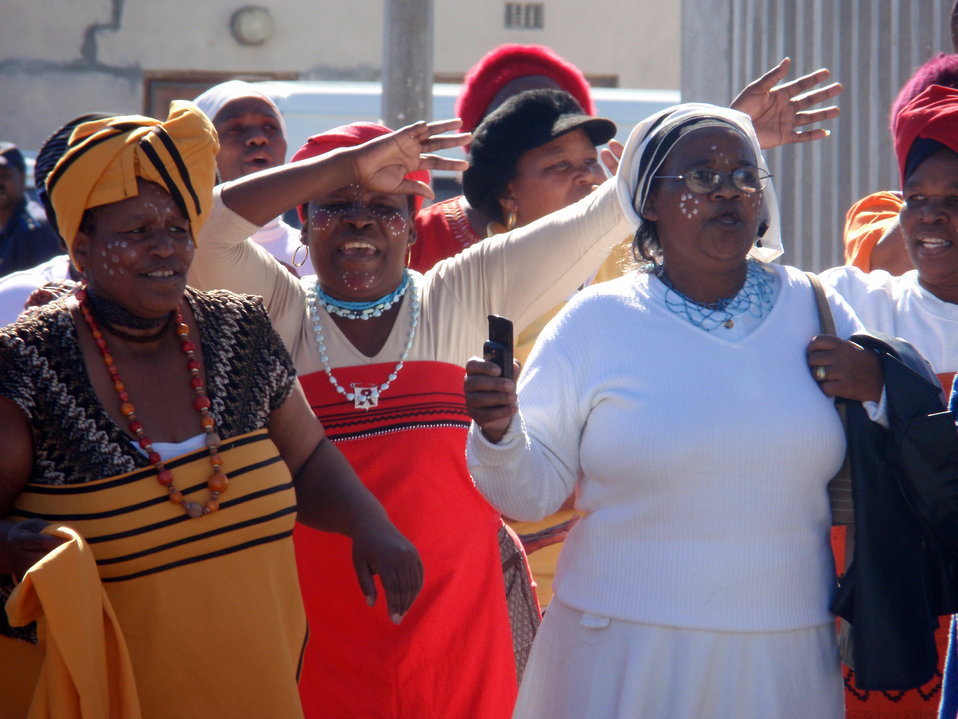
Behind the Scenes: Secretary Clinton Visits Victoria Mxenge Housing Development

People greet U.S. Secretary of State Hillary Rodham Clinton as she arrives at the Victoria Mxenge Housing Development in Cape Town, South Africa August 8, 2009.